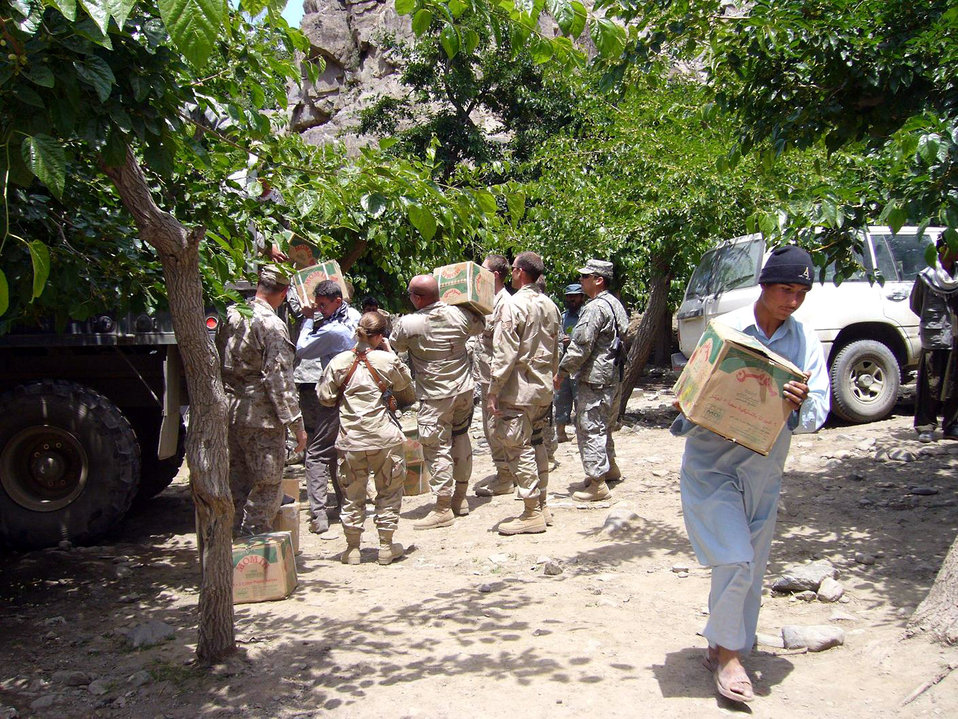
Multi-service team delivers goods to Afghan village

The Panjshir Provincial Reconstruction Team, members of the 405th Civil Affairs Battalion and a local villager offload bags and boxes of food at the Dara District Center in Afghanistan on Monday, June 12.